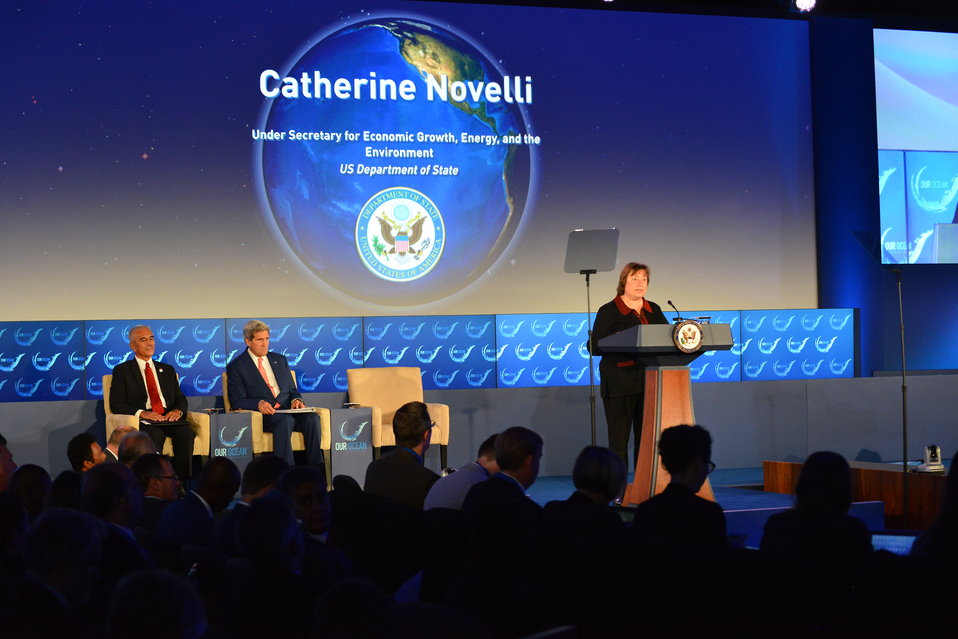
Under Secretary Novelli Delivers Opening Address at the 2014 'Our Ocean' Conference

Under Secretary for Economic Growth, Energy, and the Environment Catherine Novelli delivers the opening address at the 2014 'Our Ocean' Conference at the U.S. Department of State in Washington, D.C. on June 16, 2014.